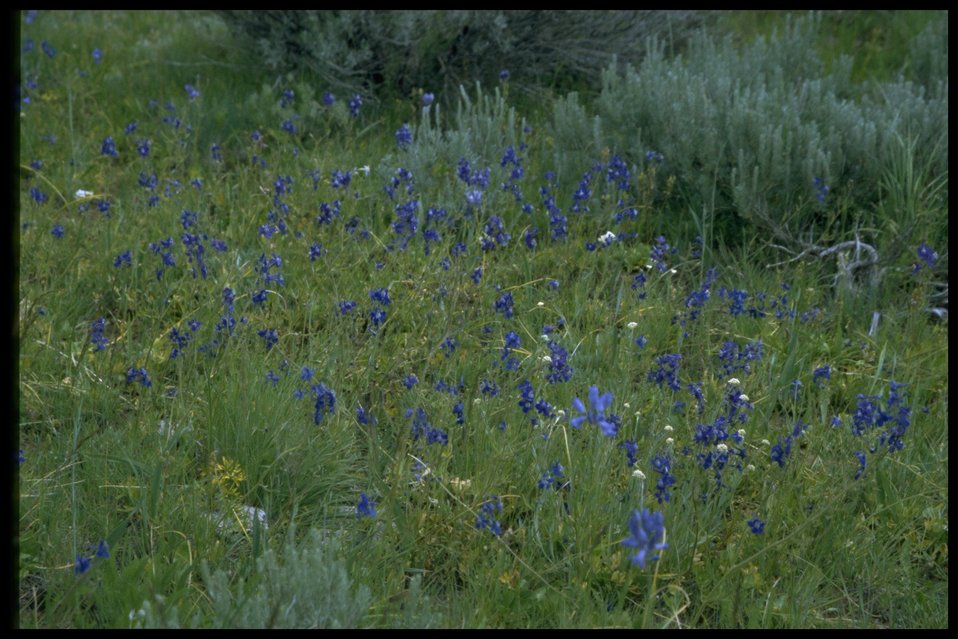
Farshot of Larkspur in habitat.